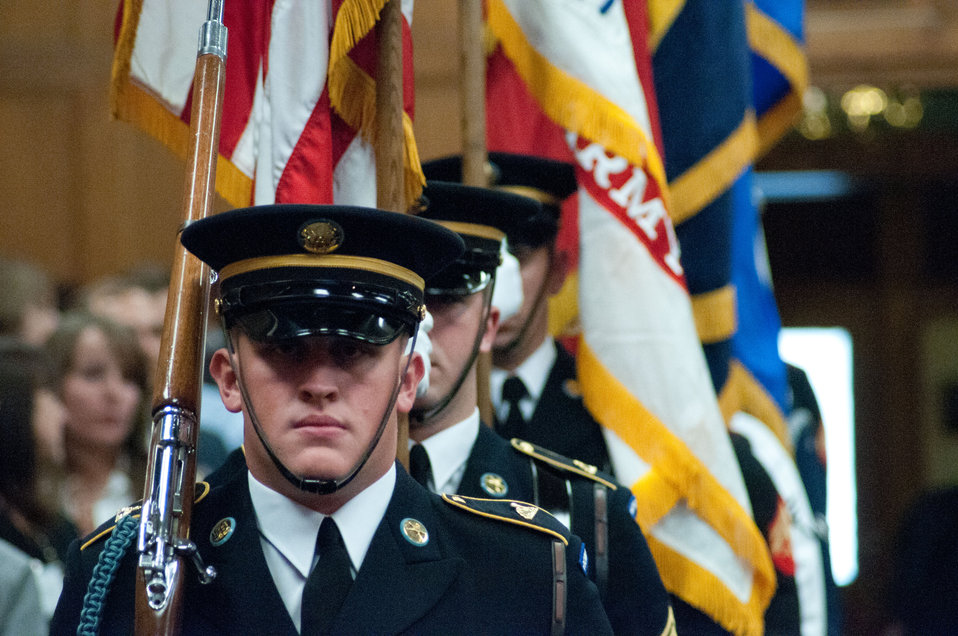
United States Department of Agriculture 63rd Secretary’s Annual Honor Awards held in the Thomas Jefferson Memorial Auditorium in Washington, D.C. on Wednesday, September 14, 2011. The Armed Forces Color Guard presented the colors and the “National Anthem.” Deputy Assistant Secretary for Administration Oscar Gonzales led the Pledge of Allegiance. Deputy Secretary of Agriculture Kathleen Merrigan provided opening remarks and introduction of Agriculture Secretary Tomas J. Vilsack.